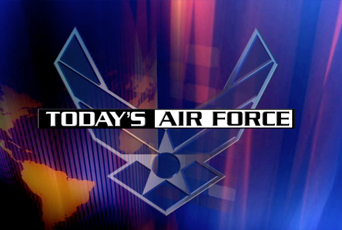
'Today's Air Force' highlights international relationships, technology